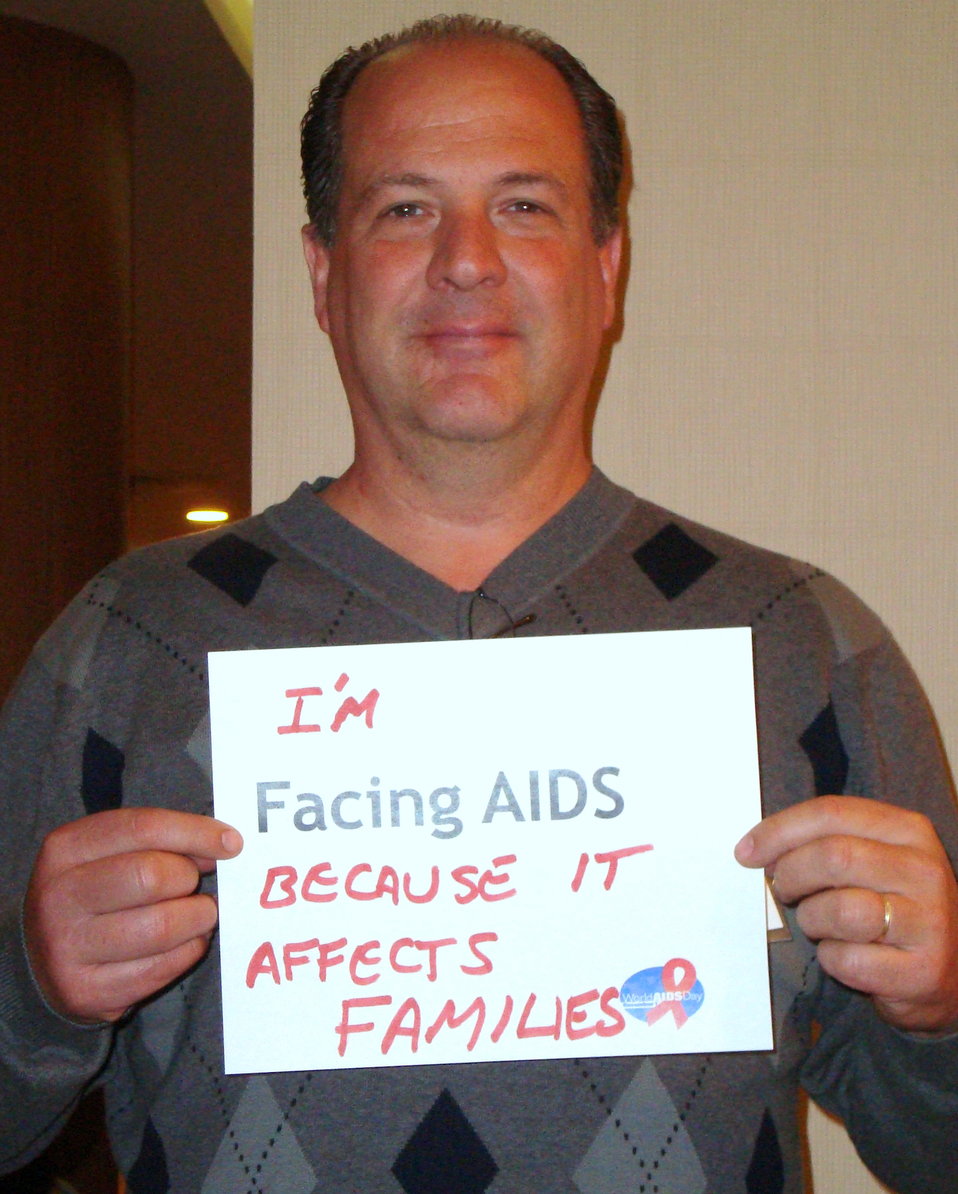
FacingAIDSCampaign 020